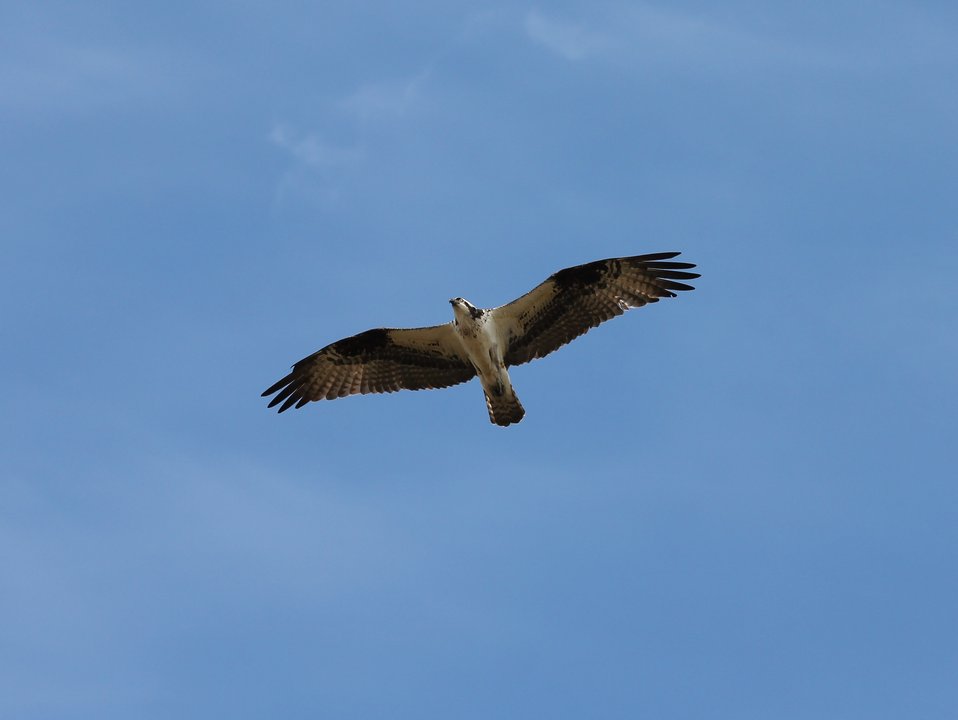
Osprey

Andreafsky wilderness, Yukon Delta National Wildlife Refuge